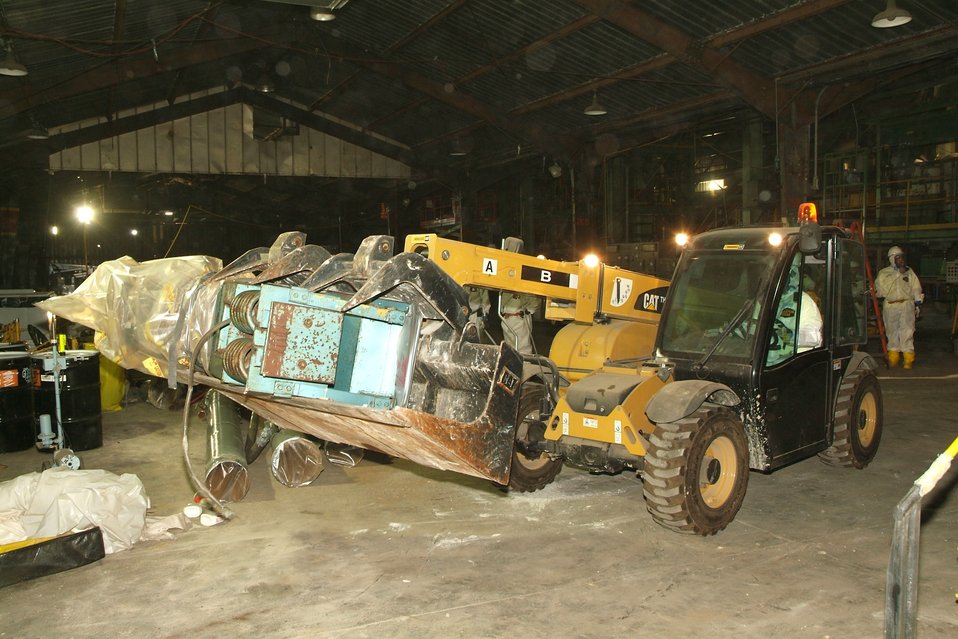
Smelter excavator